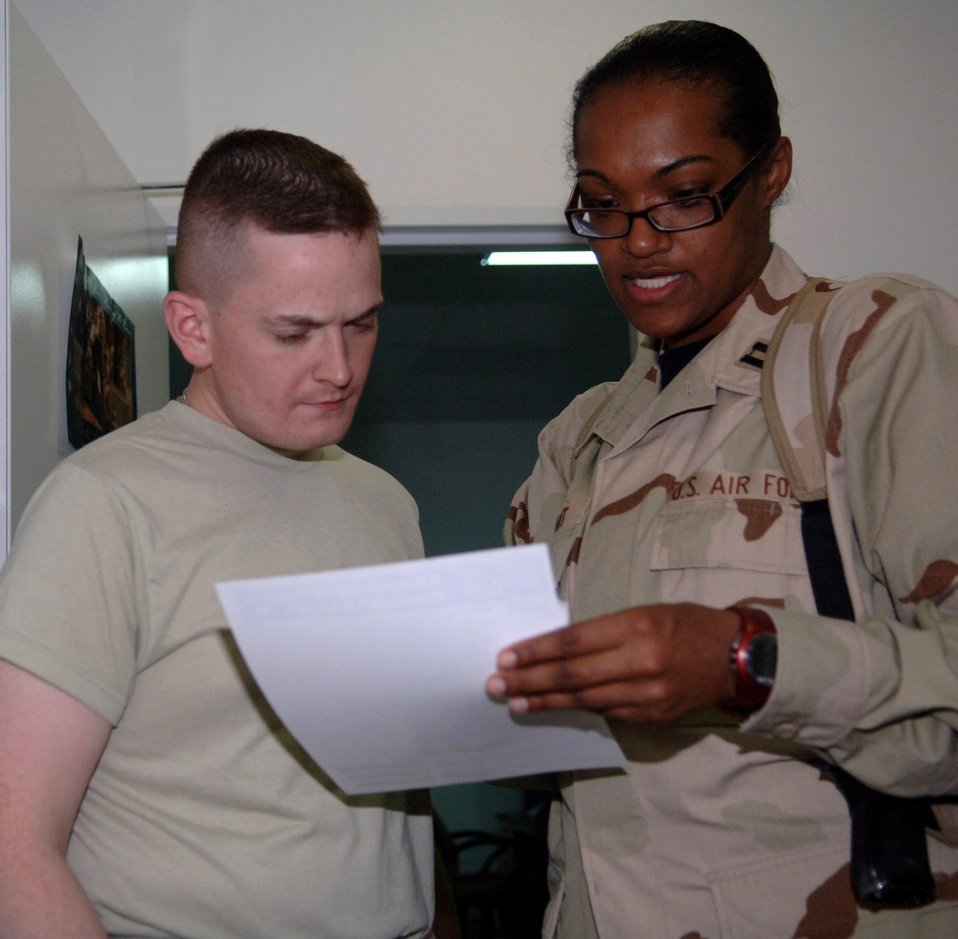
Nutrition flight helps keep servicemembers fit to fight

Capt. Saunya Bright, a 332nd Expeditionary Medical Support Squadron nutrition flight dietician, discusses with Airman 1st Class David Mann, a 332nd Air Expeditionary Wing chaplain?s assistant, the results of his body-composition assessment. The body-composition analysis measures body-mass index, total amount of body water and body fat percentage, and is a more accurate way to determine fitness level. Captain Bright is deployed from Lackland Air Force Base, Texas, and Airman Mann is deployed from Laughlin AFB, Texas.